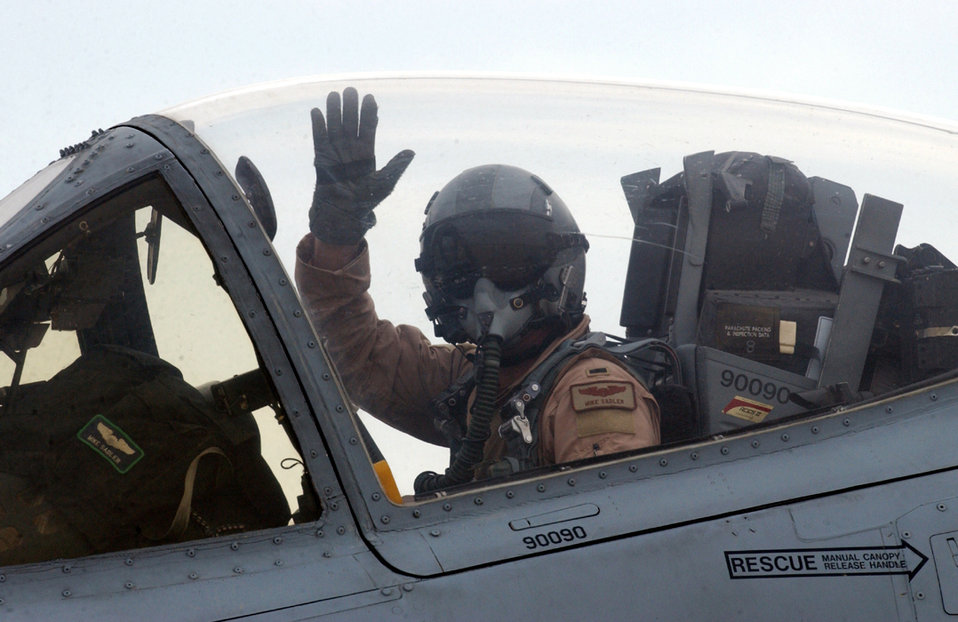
Taxi wave

OPERATION IRAQI FREEDOM -- 1st Lt. Mike Sadler, a pilot with the 442nd Fighter Wing, waves at his crew chief during his taxi to the runway to launch his A-10 on a combat mission over Iraq on April 18. The 442nd is from Whiteman Air Force Base, Mo., and is deployed to Tallil Air Base in southern Iraq.